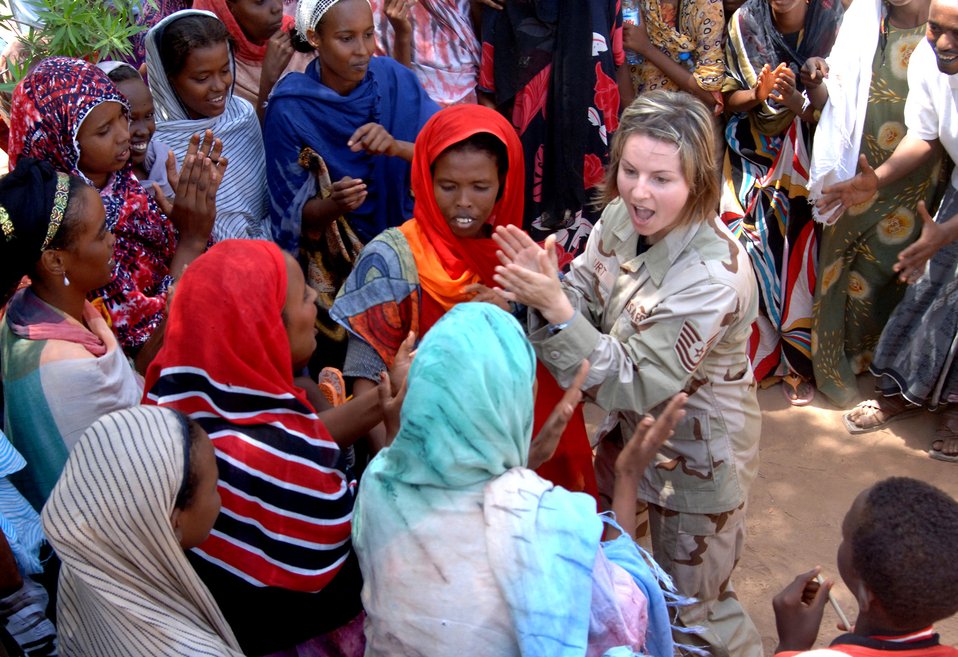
CENTAF band, Marines entertain Damerjog villagers

Tech. Sgt. Sherry Burt dances and sings with locals from the village of Damerjog, Djibouti after performing with the U. S. Central Command Air Forces Expeditionary Band the